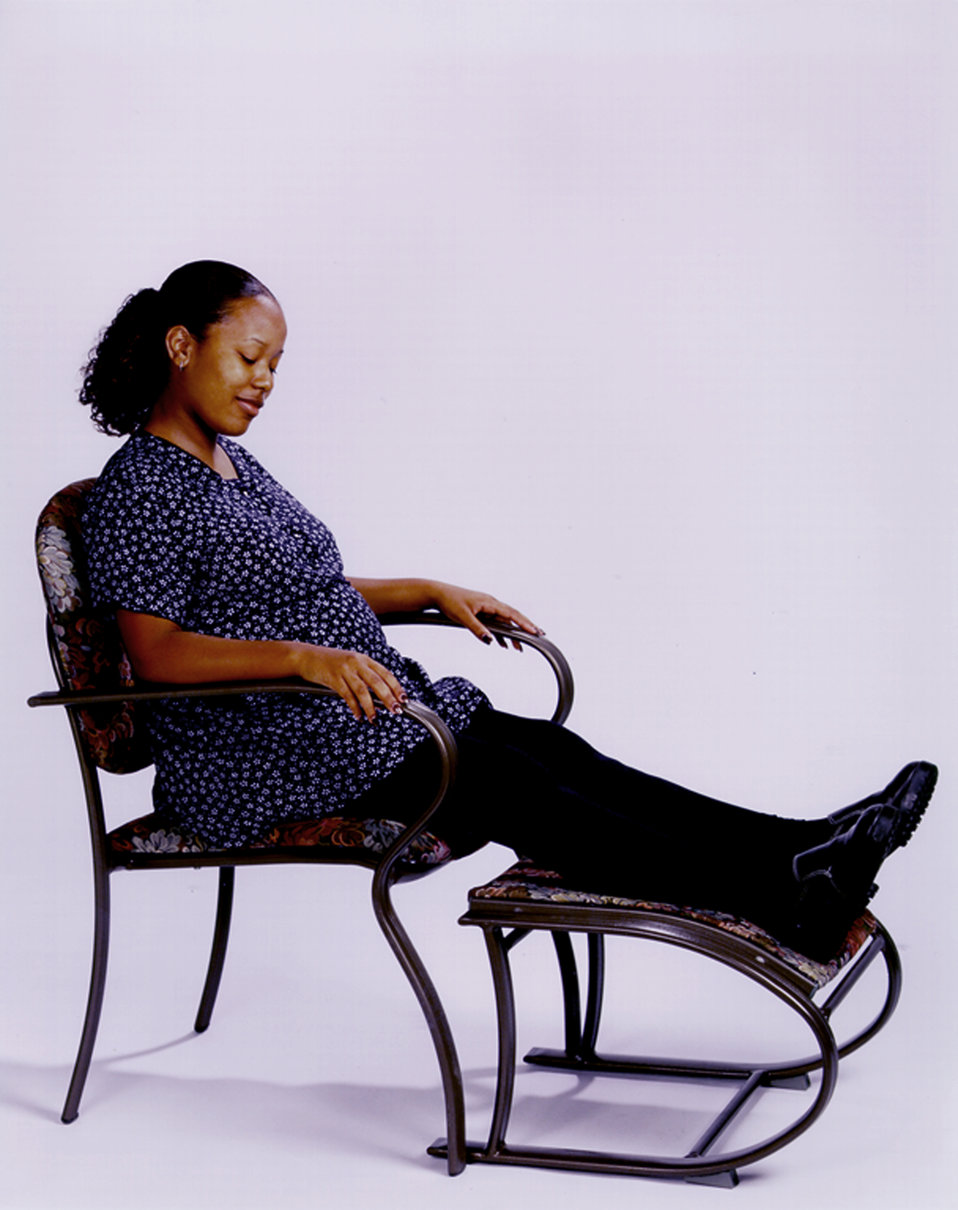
This is one of a series of ten images, (PHIL# 9144 - 9153), depicting one of LifeSpan� Furnishing's line of chairs, designed to make sitting down and rising safer and easier, and sitting more comfortable and supportive. This image showed a pregnant woman who was comfortably seated in one of these chairs, and using the footstool that had been stored beneath the chair. These chairs combined aesthetics and function, and were more comfortable for most people, benefiting those who would care for others, by reducing physical exertion and stress needed when assisting others. The user could take advantage of the extended arms for stability when lowering or rising from a seated position. Close attention was paid to many small details including the non-skid rubber feet, and the elimination of pinch points and sharp edges. The LifeSpan� seating product line included four different designs, all based on an extended arm and leg concept that provided users with better leverage and support.